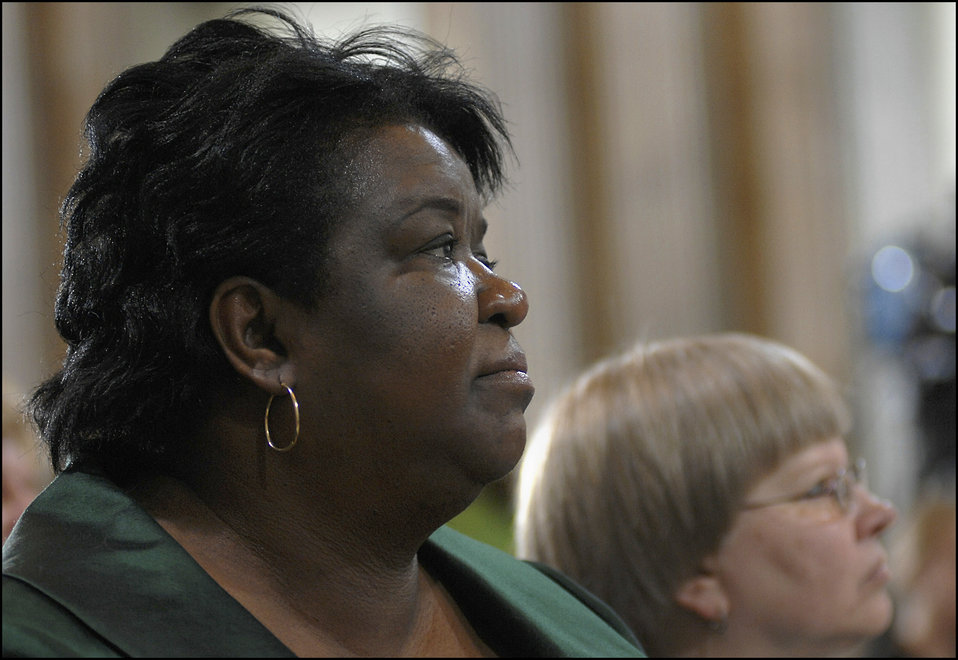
Women in Finance Symposium, 03/29/2010

CDFI Fund Director Donna Gambrell at the Women in Finance Symposium, March 29, 2010.